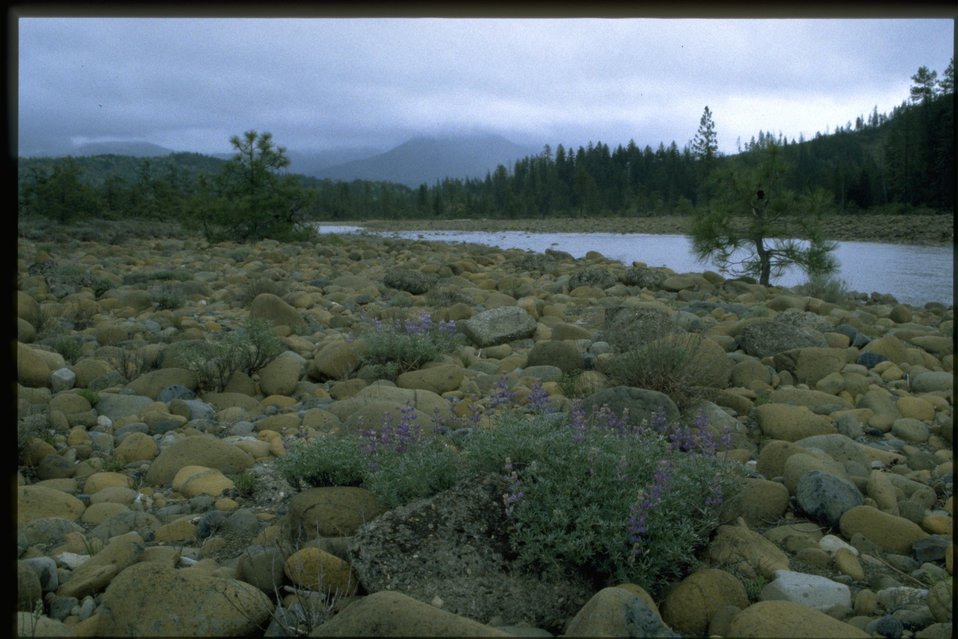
View of river from Rough & Ready.